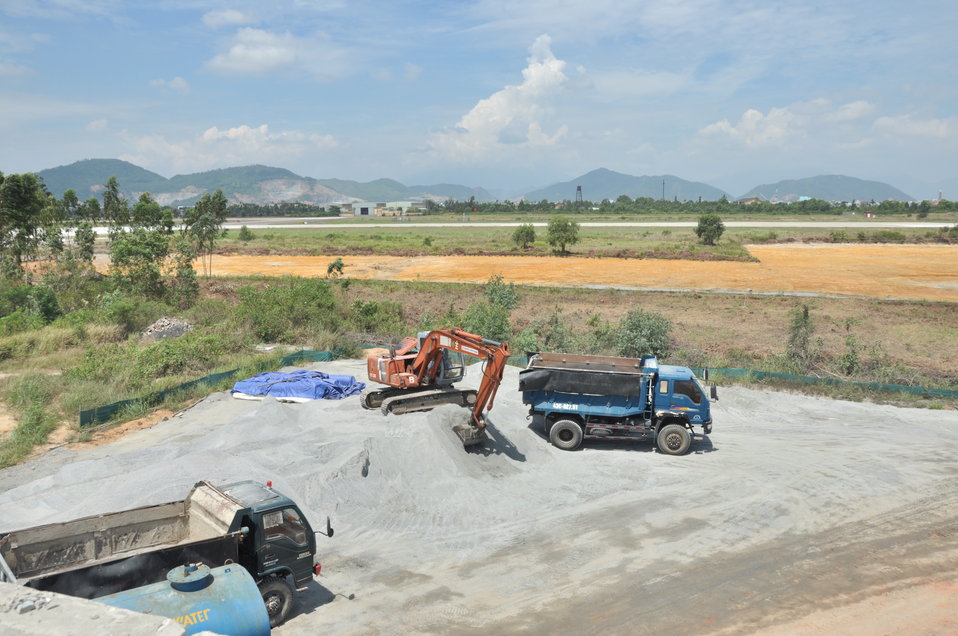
Site construction at the Environmental Remediation of Dioxin Contamination at Danang Airport

Progress at the Danang Airport remediation site
April 23, 2013